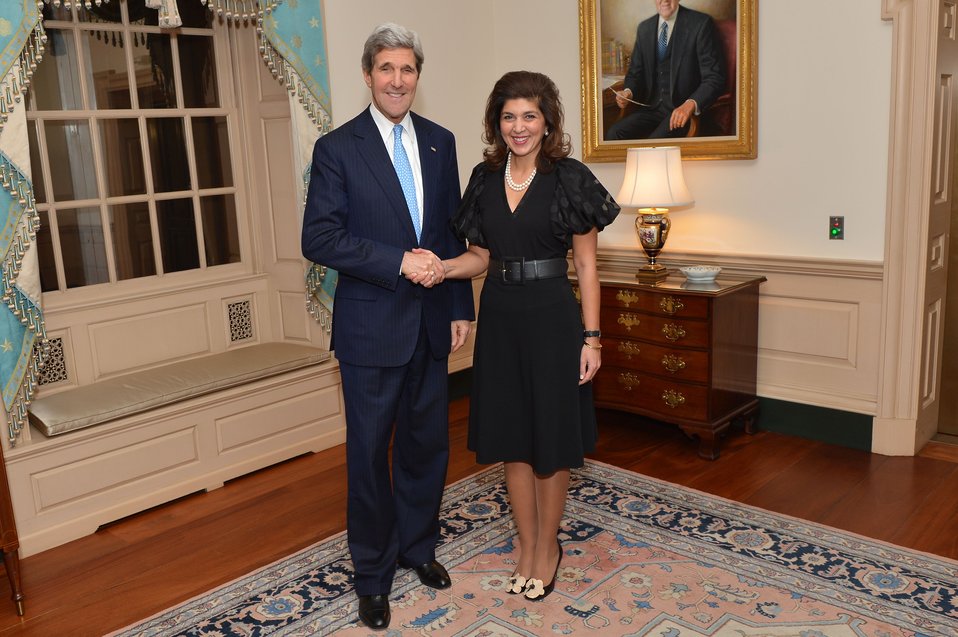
Secretary Kerry Poses for a Photo With Special Representative Pandith

U.S. Secretary of State John Kerry poses for a photo with departing Special Representative to Muslim Communities Farah Pandith at a farewell reception in her honor at the U.S. Department of State in Washington, D.C., on January 27, 2014.